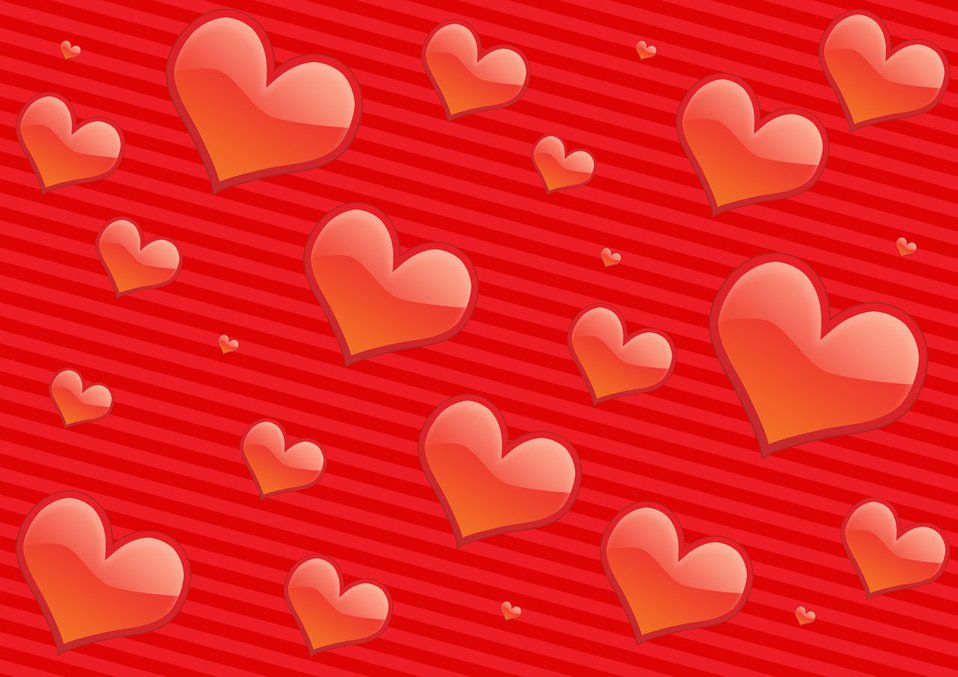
Red hearts

Lovely red hearts on striped background.